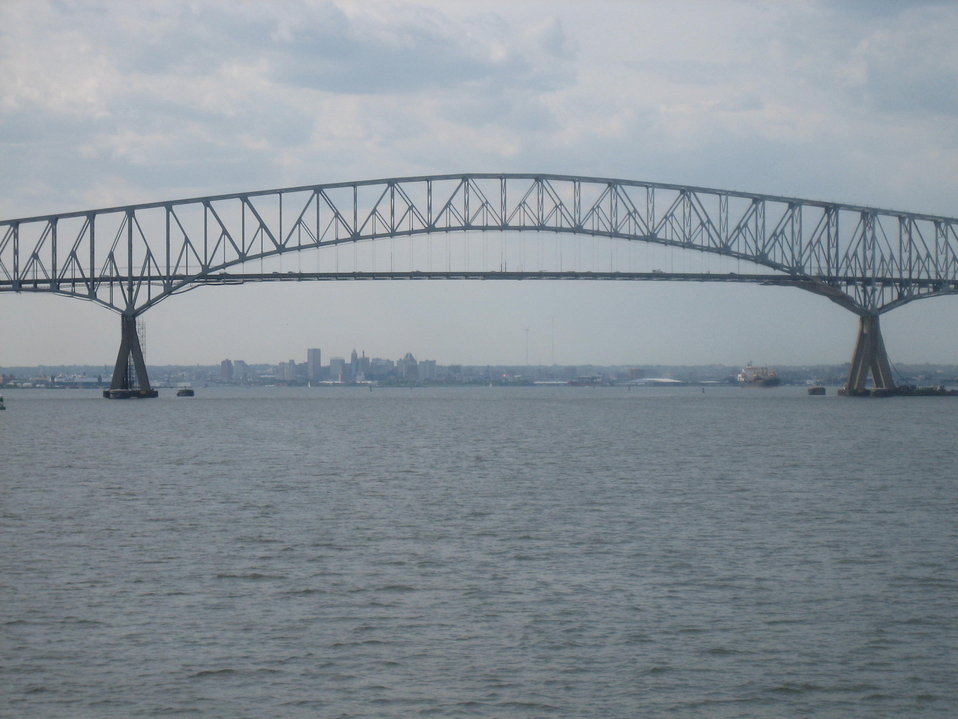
The I-695 Francis Scott Key Bridge spanning Baltimore Harbor.